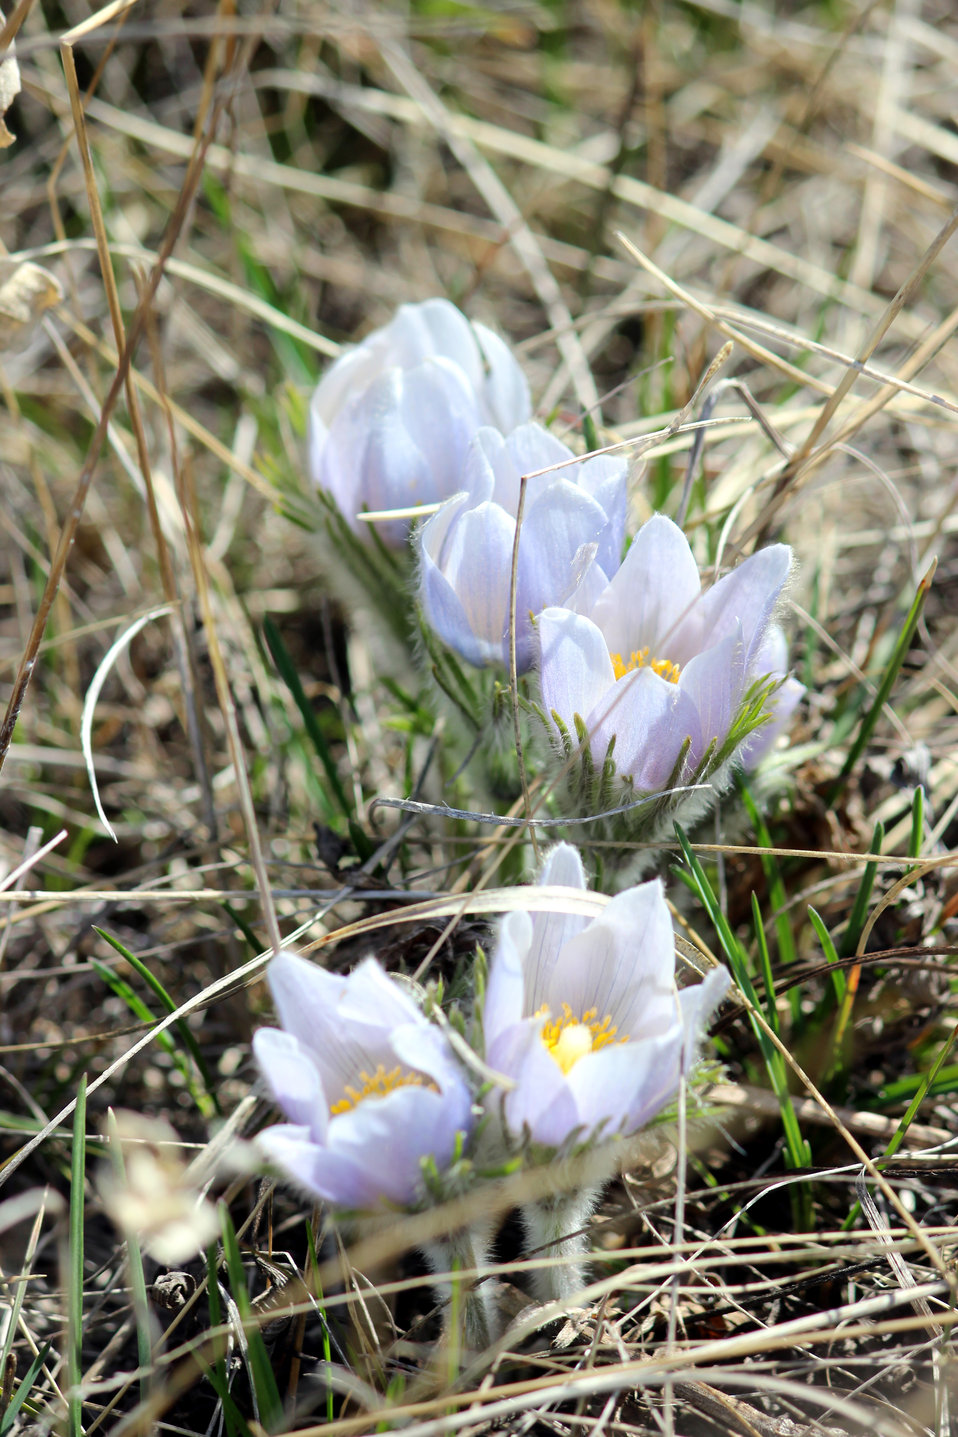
Pasqueflowers

The pasqueflower (or May flower or crocus, among other names) is a species native to the northern U.S. and Canada. It is usually found only on sod that has never been broken. It is one of the earliest bloomers, and shows up as daubs of pale purple against the yellow and browns of the grasses in April and early May in North Dakota. These were found on the North Brinkman WPA in the Kulm Wetland Management District.